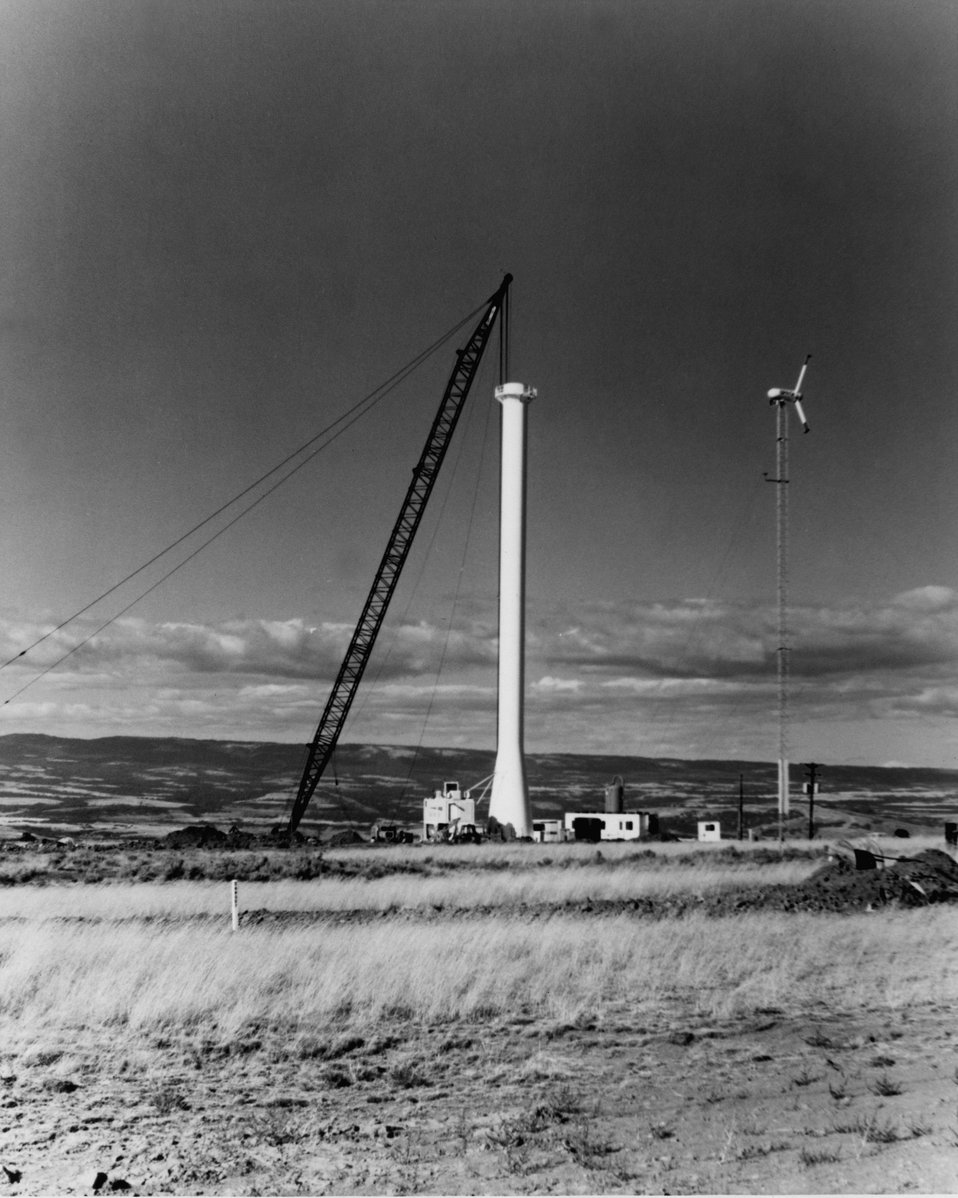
The Nation's first large experimental windfarm consisting of three machines each producing 2.5 magawatts (million watts), was officially dedicated May 29, 1981, at Goodnoe Hills, Washington. c. 1981